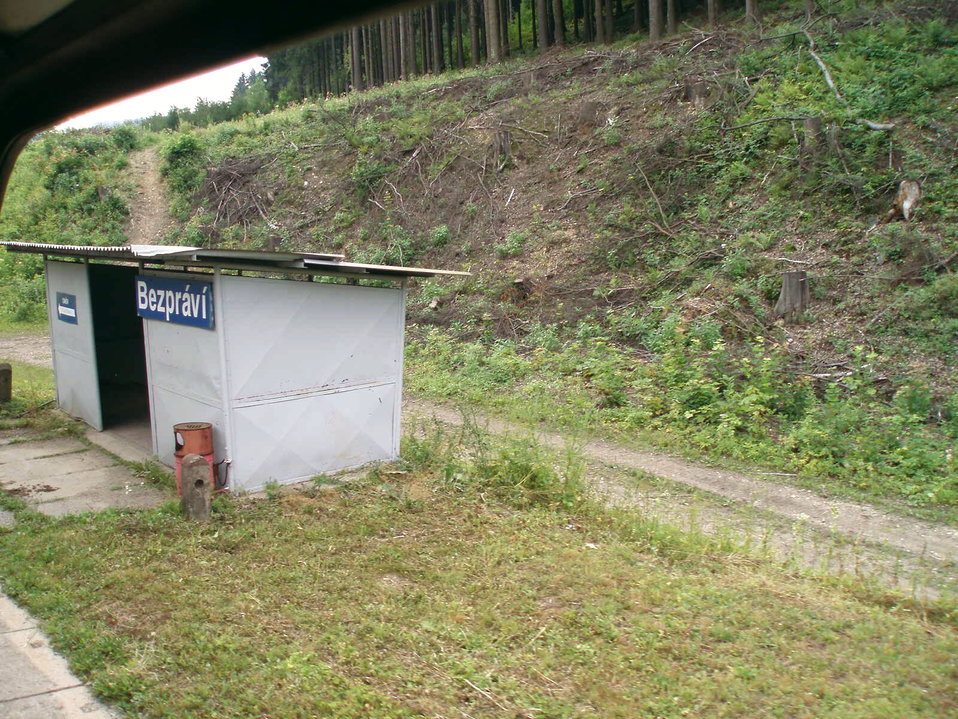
Čeština: Vlaková zastávka Bezprávi